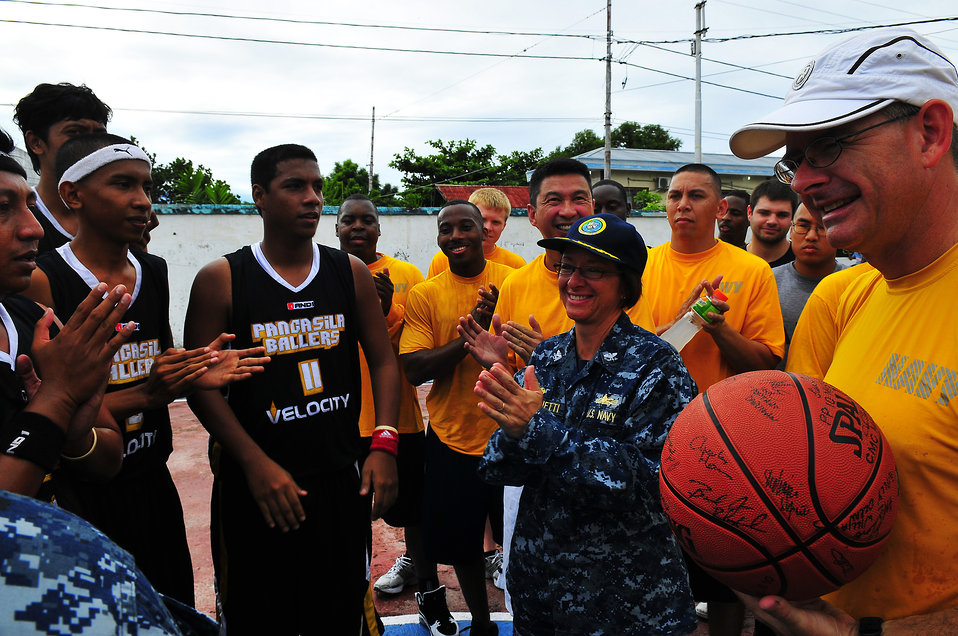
PP2010 Commander Capt. Franchetti Hands off the Game Ball to Indonesian Sailors

Pacific Partnership 2010 Commander Capt. Lisa M. Franchetti hands off the game ball to Indonesian sailors during the half-time in a game between Sailors from the Military Sealift Command hospital ship USNS Mercy (T-AH 19) and players from the Pangasila Ballers team on July 21, 2010, in Ternate, Indonesia. Mercy is deployed for Pacific Partnership 2010, the fifth in a series of annual U.S. Pacific Fleet endeavors conducted in Indonesia as a disaster relief exercise aimed at strengthening regional partnerships.